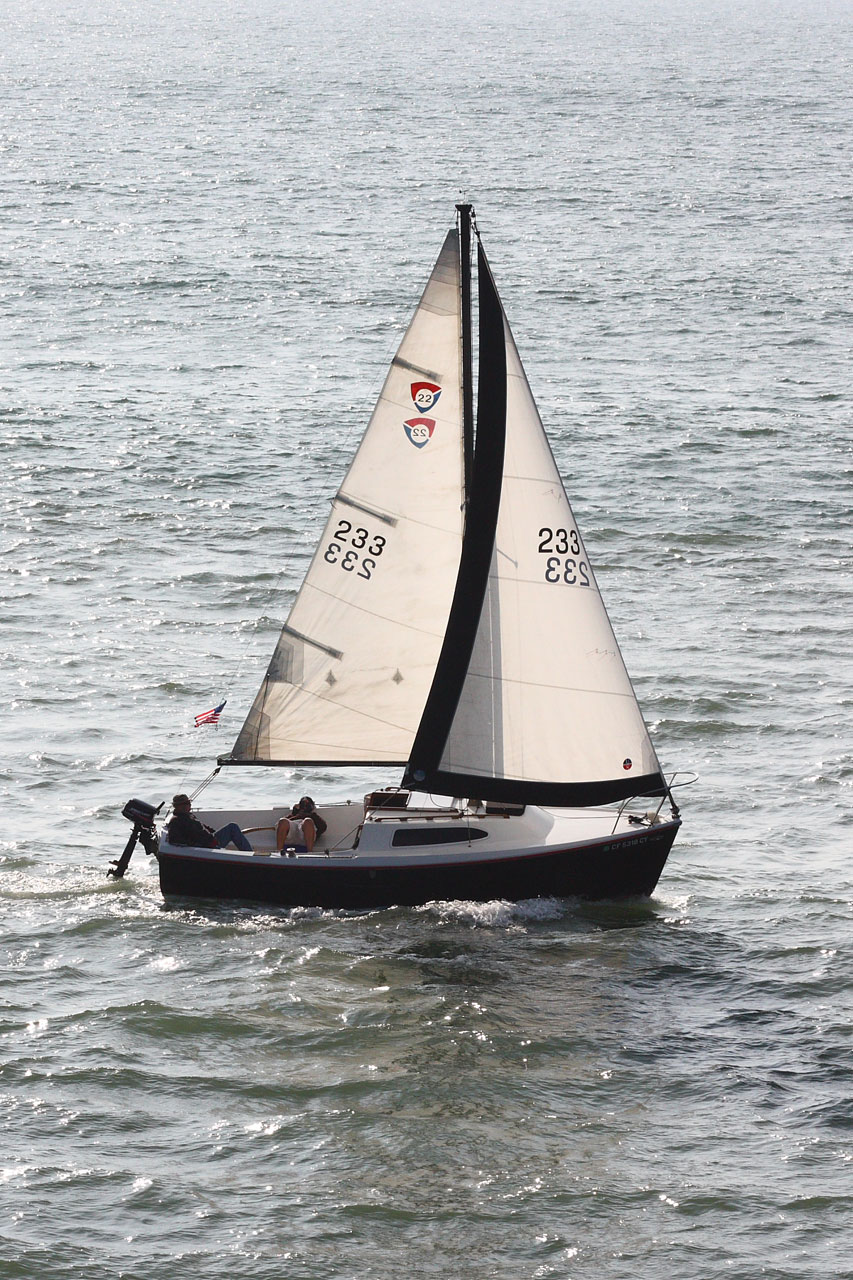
Small sloop sailboat

Small, single-mast sailboat making its way north past huntington beach pier.